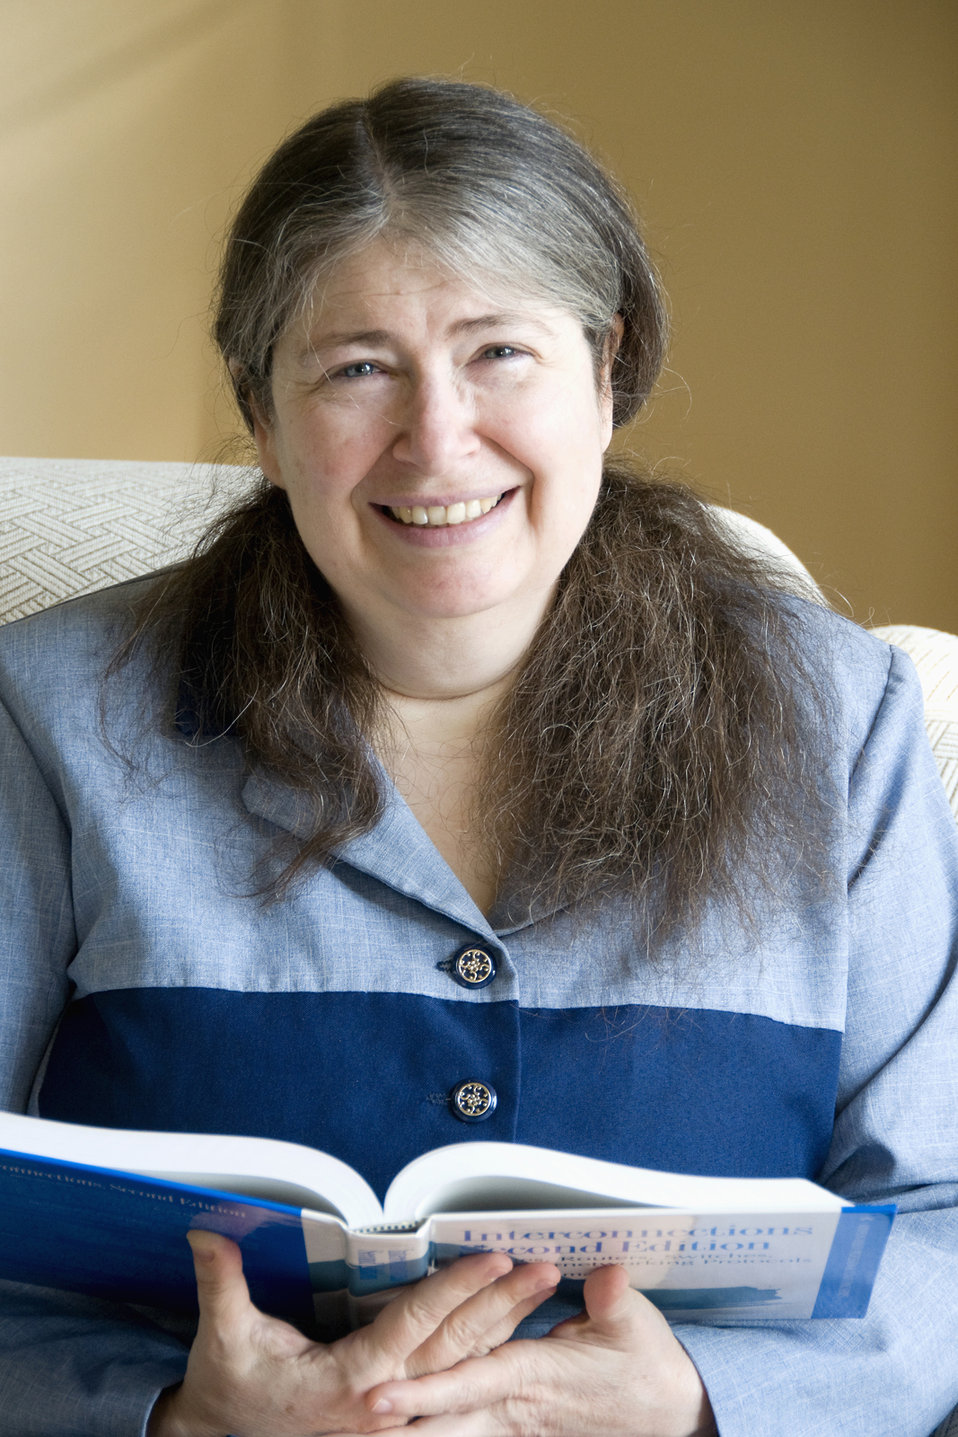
Radia Perlman